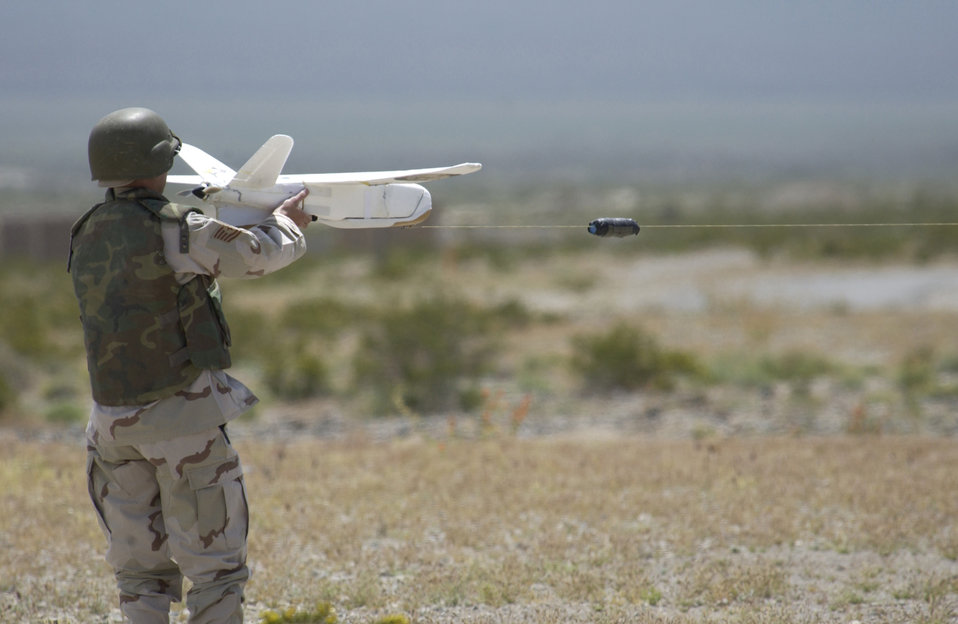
PASS surveillance

INDIAN SPRINGS AIR FORCE AUXILIARY FIELD, Nev. -- Tech. Sgt. Patrick Vasquez prepares to release a force protection airborne surveillance system aircraft to fly a mission during an urban warfare training exercise here May 4. The system is a small, unmanned aircraft that gives real-time video surveillance to operators, who in turn are able to instantly relay enemy force locations to troops in the field. Sergeant Vasquez is a force protection airborne surveillance system operator with the 99th Security Forces Group.